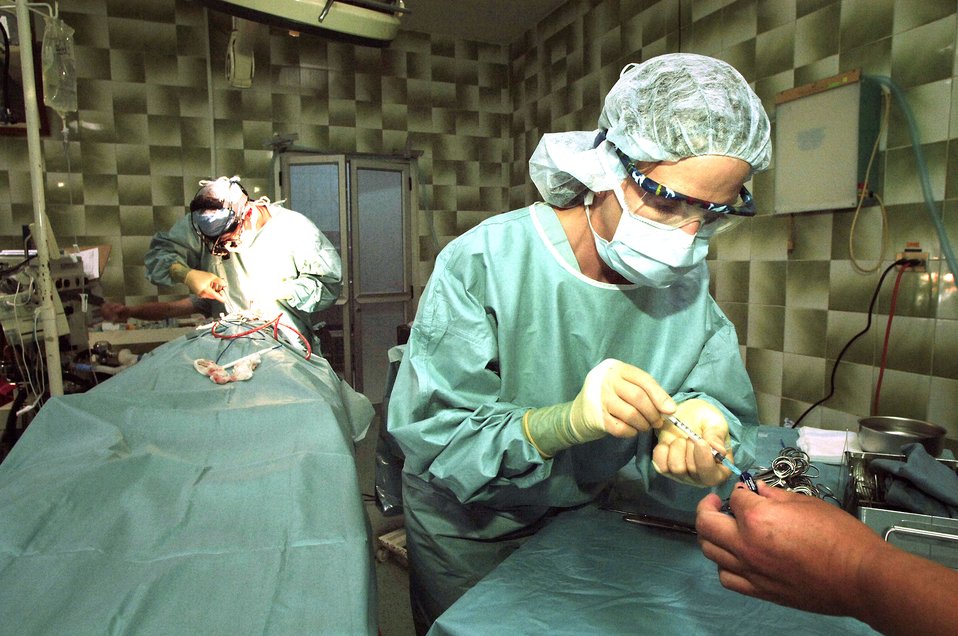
Air Force medics conduct plastic surgery clinic

CUENCA, Ecuador -- Master Sgt. Kelly Mathis prepares a syringe during surgery to repair the cleft lip of 14-year-old Adrian Puata. Sergeant Mathis is with a seven-person plastic surgery team from Wilford Hall Medical Center at Lackland Air Force Base, Texas, providing free corrective surgeries to Ecuadorian civilians as part of a 12-day medical readiness training exercise.